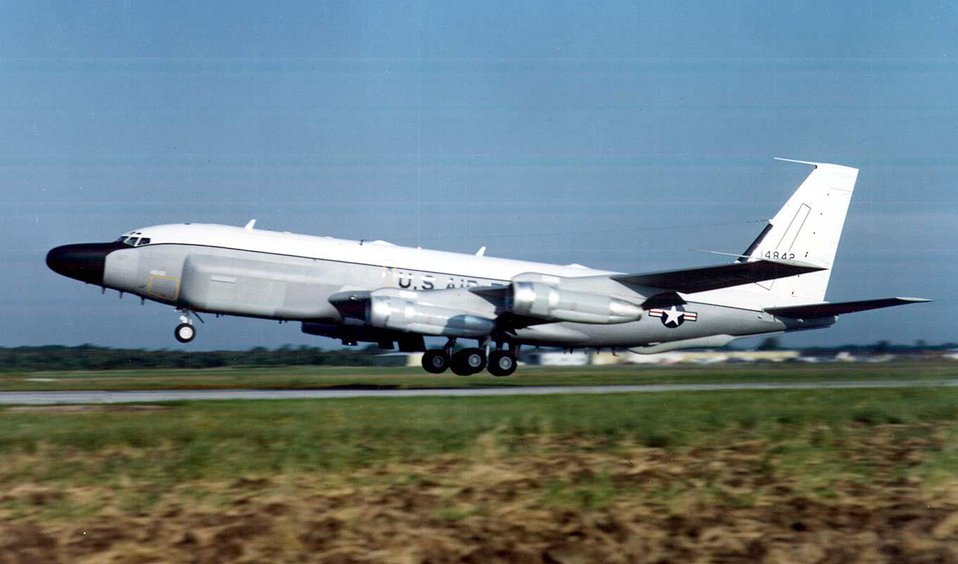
RC-135 RJ

FILE PHOTO -- The hog-nosed RC-135 reconnaissance aircraft, with its extensive antennae array, provides vital real-time battle management information to mission planners, commanders and warfighters. The aircraft is a high-altitude version of the C-135, which is a militarized version of the Boeing 707. The Rivet Joint aircraft, owned and operated by the 55th Wing, Offutt Air Force Base, Neb., provides direct, near real-time reconnaissance information and electronic warfare support to theater commanders and combat forces. The Rivet Joint crew consists of members of several 55th Wing squadrons.